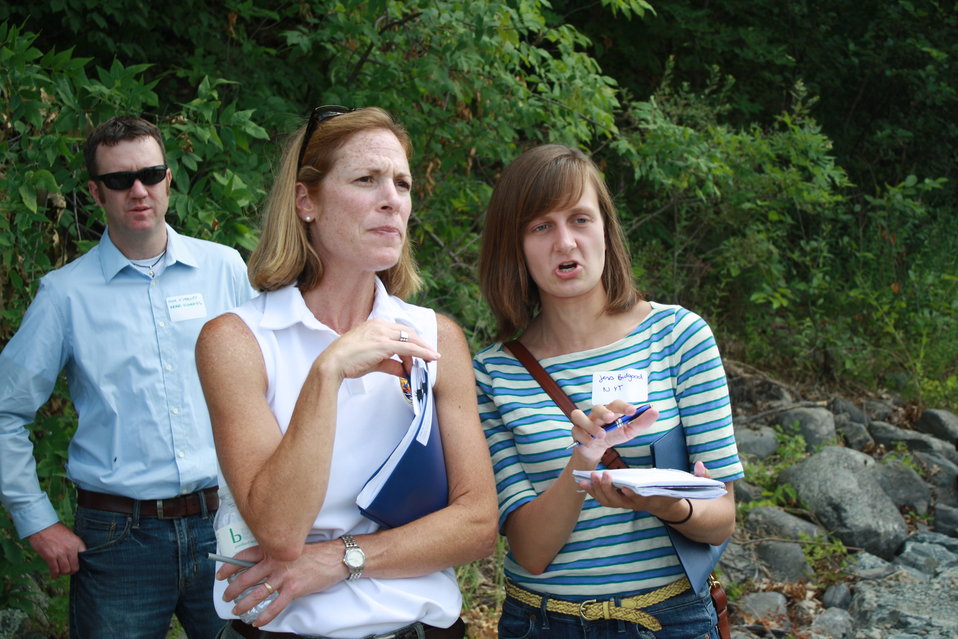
Veazie Dam Removal

Wendi Weber, U.S. Fish and Wildlife Service Northeast Regional Director, talks with Jess Bidgood, reporter for The New York Times.